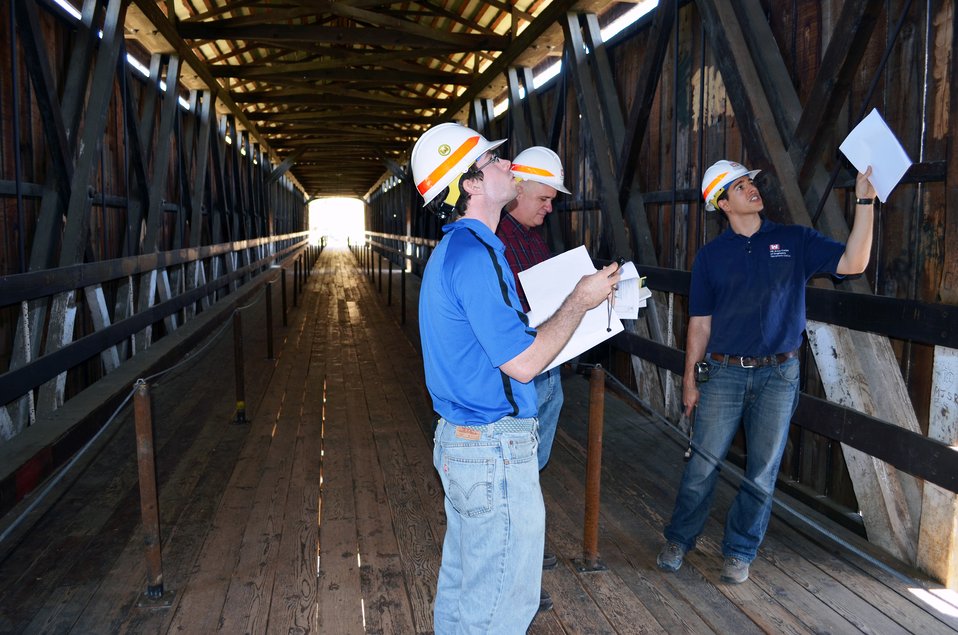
Corps to restore historic Knights Ferry Covered Bridge

(From left) Chris Bayliss, Brad Ninnis and Christopher Abela, engineers with the U.S. Army Corps of Engineers Sacramento District, inspect the Knights Ferry Covered Bridge July 2, 2012 at Stanislaus River Parks near Oakdale, Calif. Engineers are working on a design to fix minor structural issues with the bridge, which was approved for inclusion as a historic landmark in the Library of Congress.